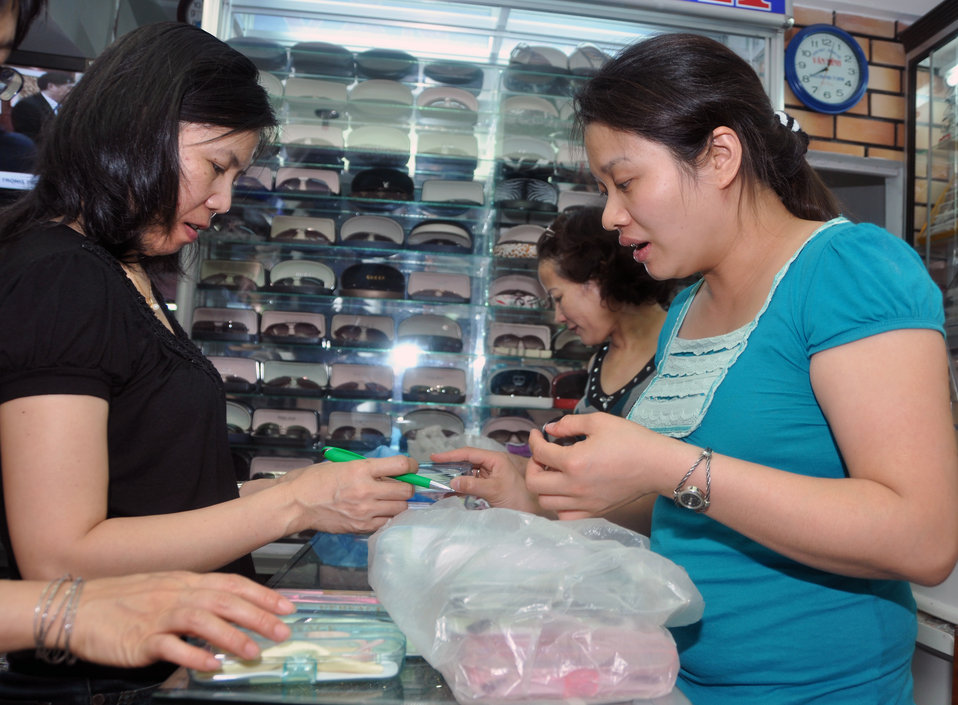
An eyeglasses specialist from the National Eye Hospital checks the quality of new glasses for students in Kon Tum.